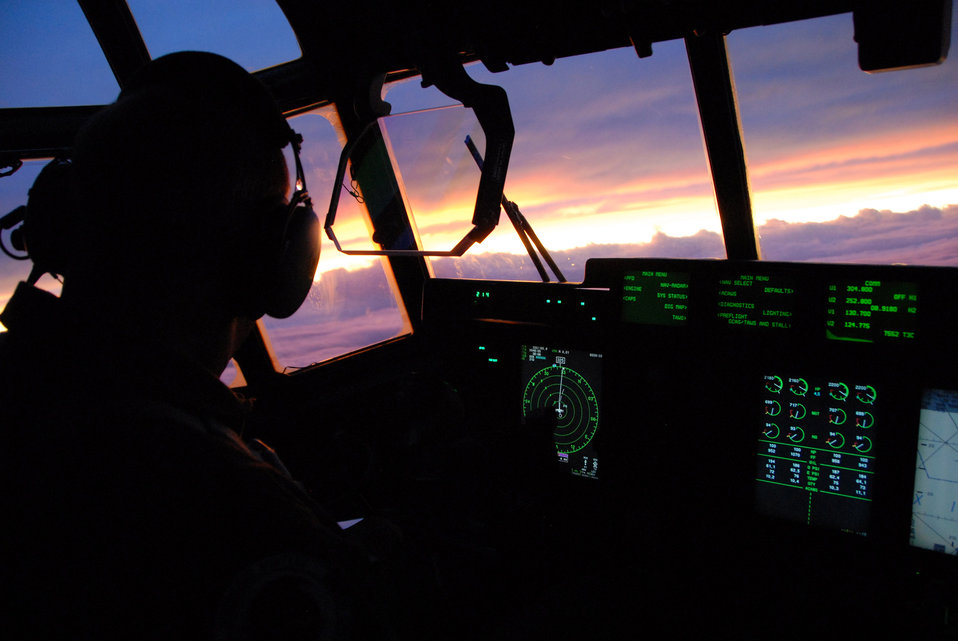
Hurricane Hunters fly nonstop into Ike

Lt. Col. Mark Carter looks at the sunset after flying nine hours on a Hurricane Ike mission on board a WC-130J Hercules Sept. 10 over the Gulf of Mexico. The Air Force Reserve Hurricane Hunters of the 403rd Wing at Keesler Air Force Base, Miss, fly 24-hours-a-day, collecting data inside the heart of Hurricane Ike. The data collected by the Hurricane Hunters improve the National Hurricane Center forecast by 30 percent. Colonel Carter is a pilot with the 403rd Wing.